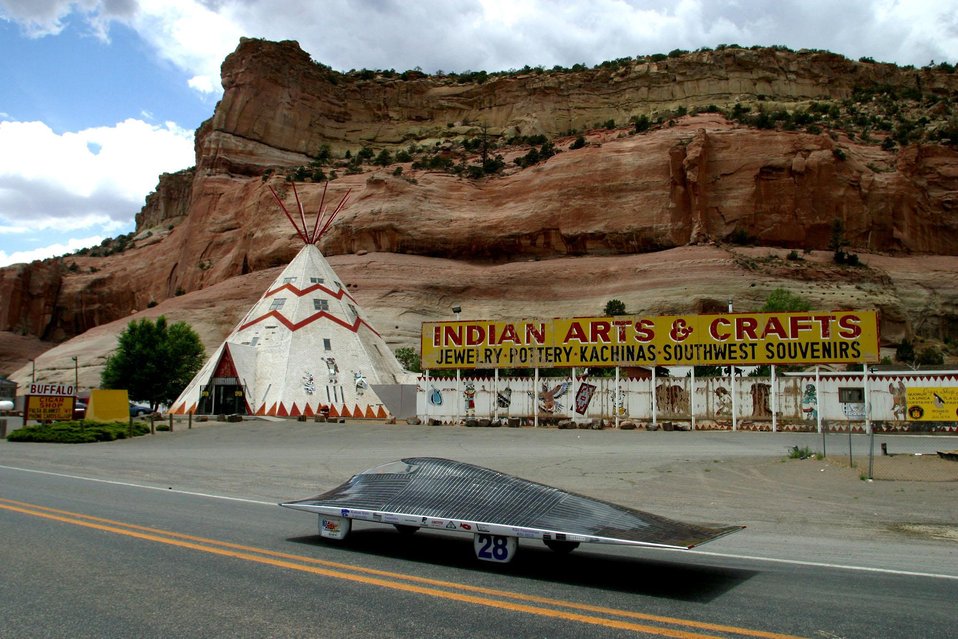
THE KANSAS STATE UNIVERSITY SOLAR CAR, CATALYST, PASSING A SOUVENIR SHOP ON ROUTE 66 NEAR THE NEW MEXICO/ARIZONA STATE LINE.

THE AMERICAN SOLAR CHALLENGE, THE LONGEST SOLAR CAR RACE IN THE WORLD, IS A DOE SPONSORED EDUCATIONAL EVENT IN WHICH TEAMS COMPETE TO BUILD AND RACE SOLAR-POWERED CARS. TWENTY UNIVERSITIES PARTICIPATED IN THIS YEAR'S EVENT WHICH STARTED IN CHICAGO, ILLINOIS ON JULY 13 AND FOLLOWED ROUTE 66 FOR 2300 MILES TO CLAREMONT, CALIFORNIA, ENDING ON JULY 23, 2003.